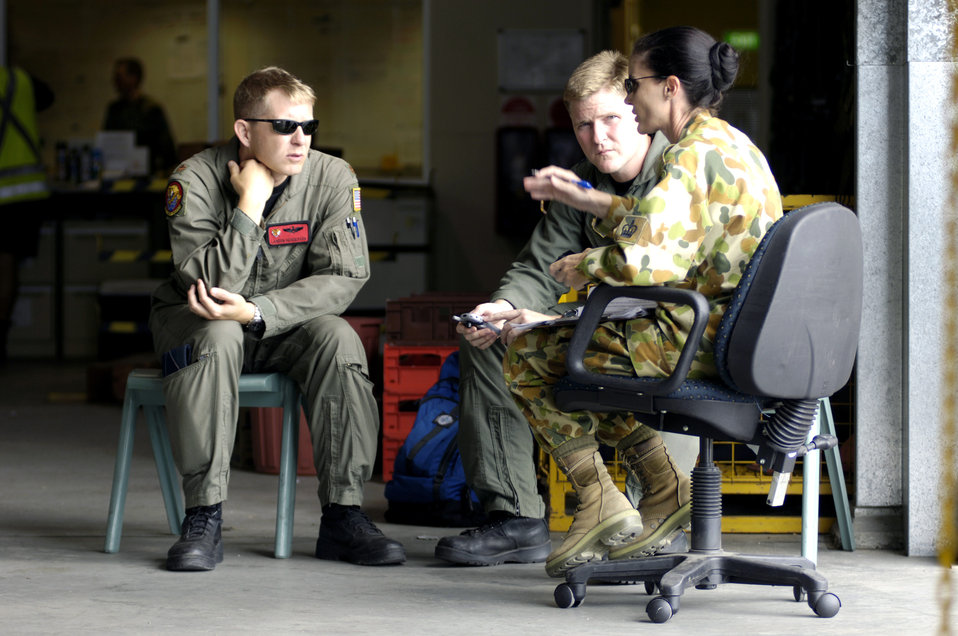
Australians learn from U.S. C-17 mission

Maj. Landon Henderson (left) and Capt. Todd Strickland talk to Warrant Officer Vivianne Northover about C-17 Globemaster III load plans at Royal Australian Air Force Base Townsville, Australia, on Wednesday, May 31, 2006. Major Henderson and Captain Strickland are the mission commanders from the 535th Airlift Squadron at Hickam Air Force Base, Hawaii. Warrant Officer Northover is with the Joint Movement Control Office at RAAF Townsville. Two C-17s from Hickam are helping the Australian Defense Force reposition its forces to better support peace operations in East Timor.